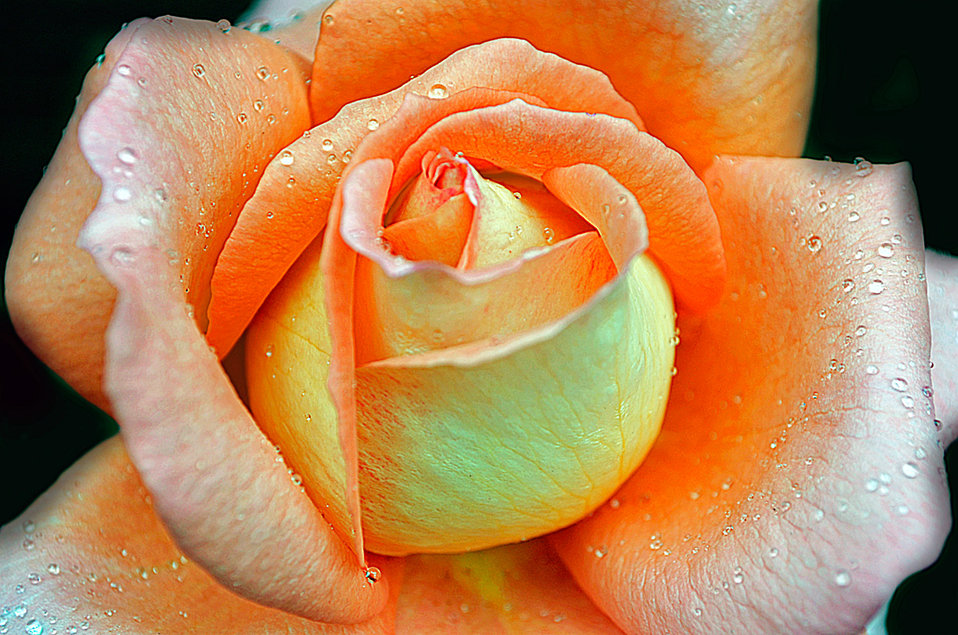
Rose - macro.